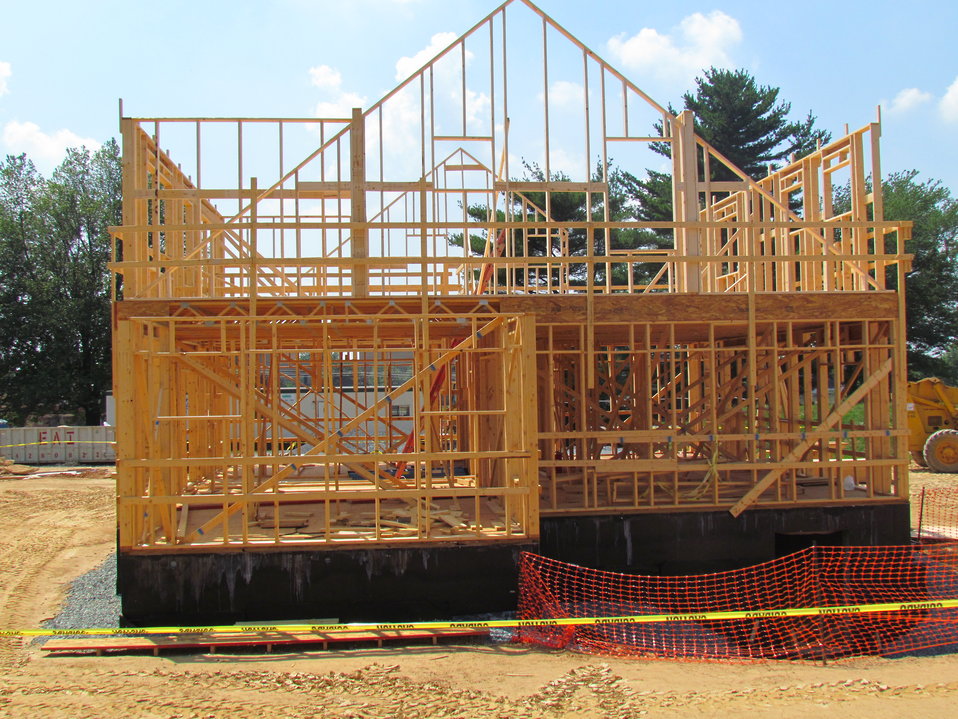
Net-Zero Energy Residential Test Facility - Picture showing end view of facility with first floor framing complete and second floor framing underway.